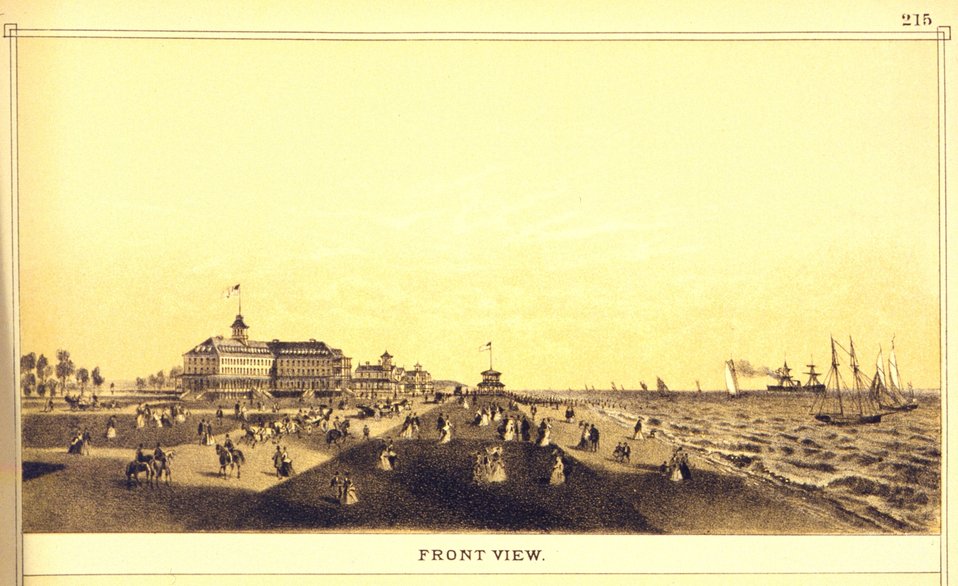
Monmouth House, Spring Lake Beach, New Jersey. Front view. P. 215. 'Historical and Biographical Atlas of the New Jersey Coast,' by T. F. Rose, 1878.